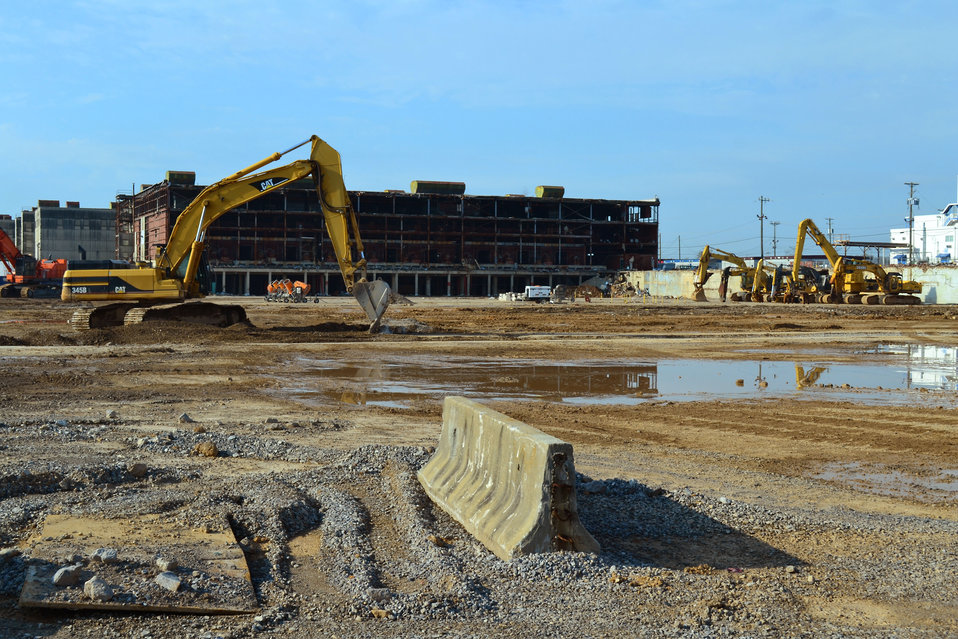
DandD work K-25 Oak Ridge

13-034 DOE photo Lynn Freeny 4-9-2013